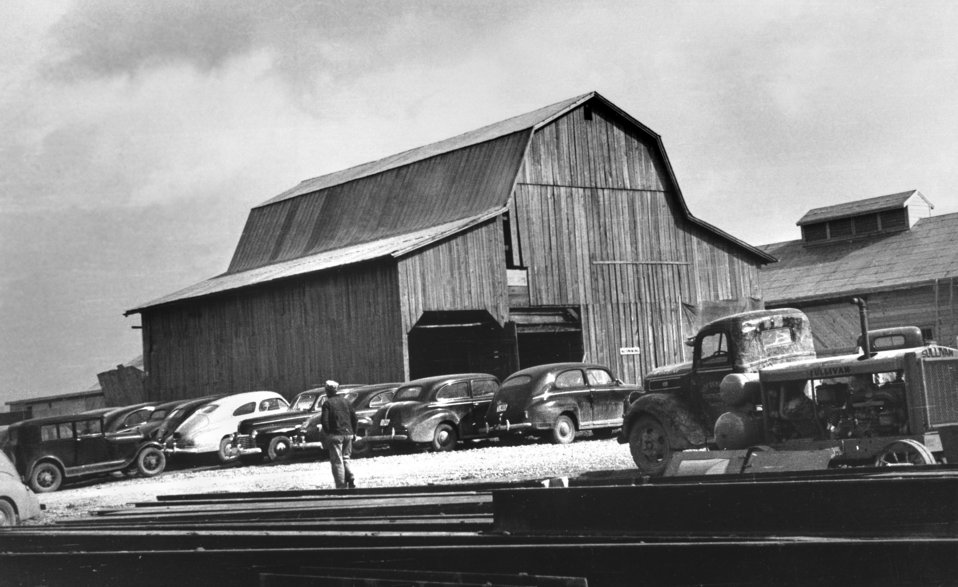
Barn Being Used for Storage 1943 Oak Ridge

ROLL-7-23 DOE photo Ed Westcott 2-26-1943 Oak Ridge Tennessee